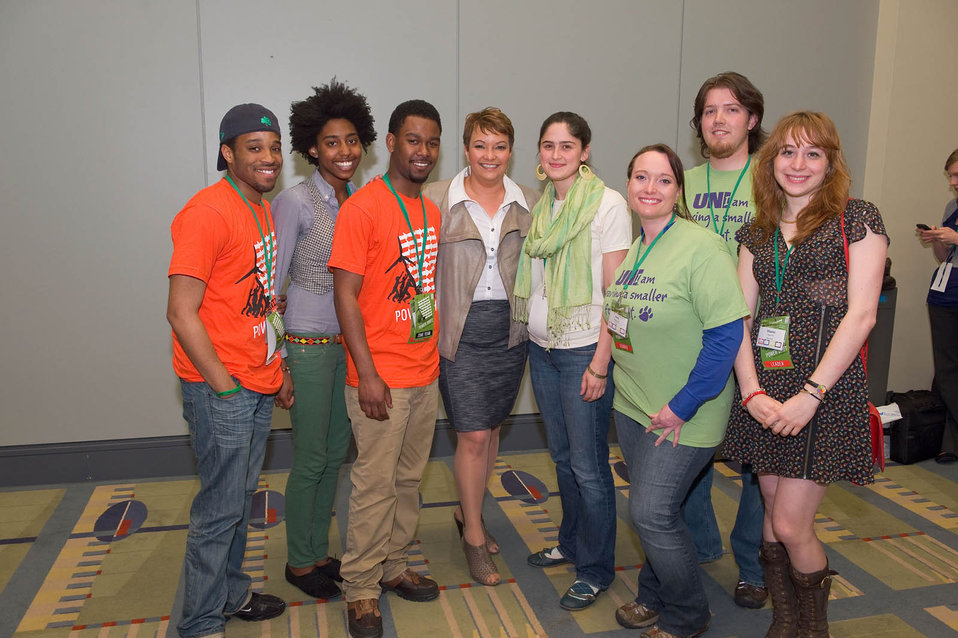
April, 2011 EPA 'ecoAmbassadors' stand with Administrator Jackson

These college students are being congratulated by EPA Administrator Lisa P. Jackson for their participation in EPA's ecoAmbassador program at the Powershift 2011 Earth Day celebration.